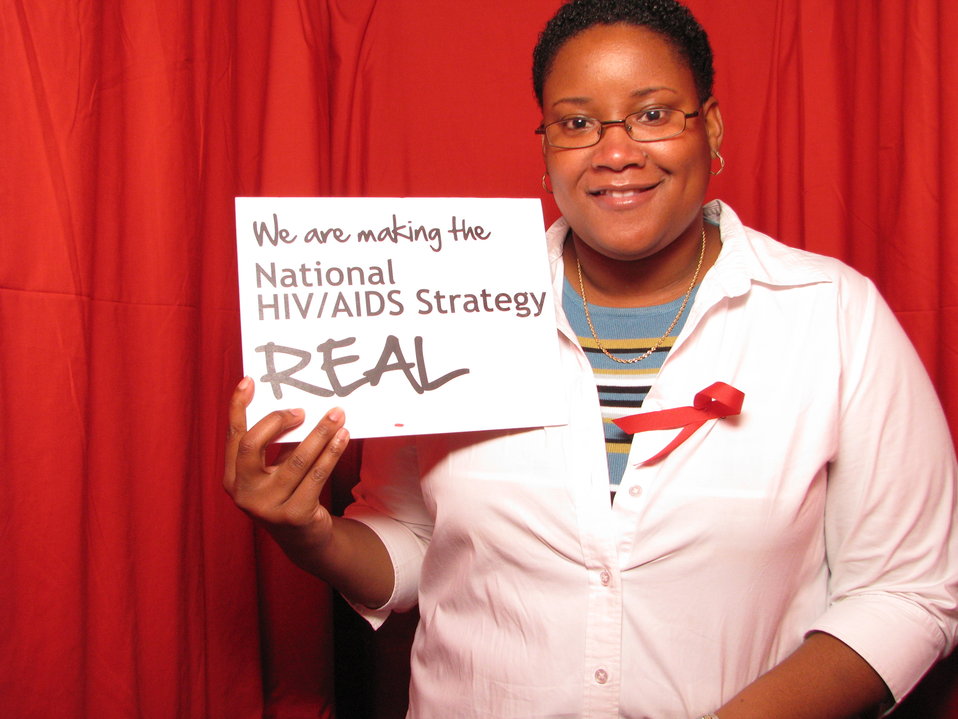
We are making the National HIV/AIDS Strategy REAL

From the AIDS.gov photo booth at the U.S. Conference on AIDS, September 2010 (Orlando, FL).